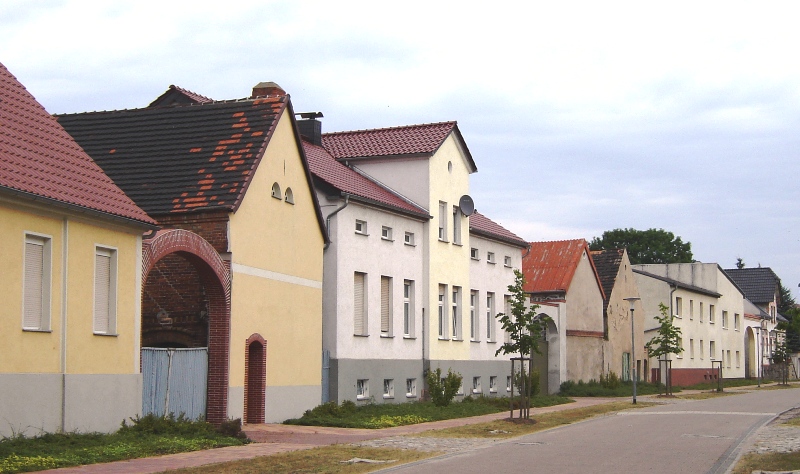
Deutsch: Friedrichstraße in Dannigkow (Sachsen-Anhalt) Friedrichstraße in Dannigkow (Saxony-Anhalt)